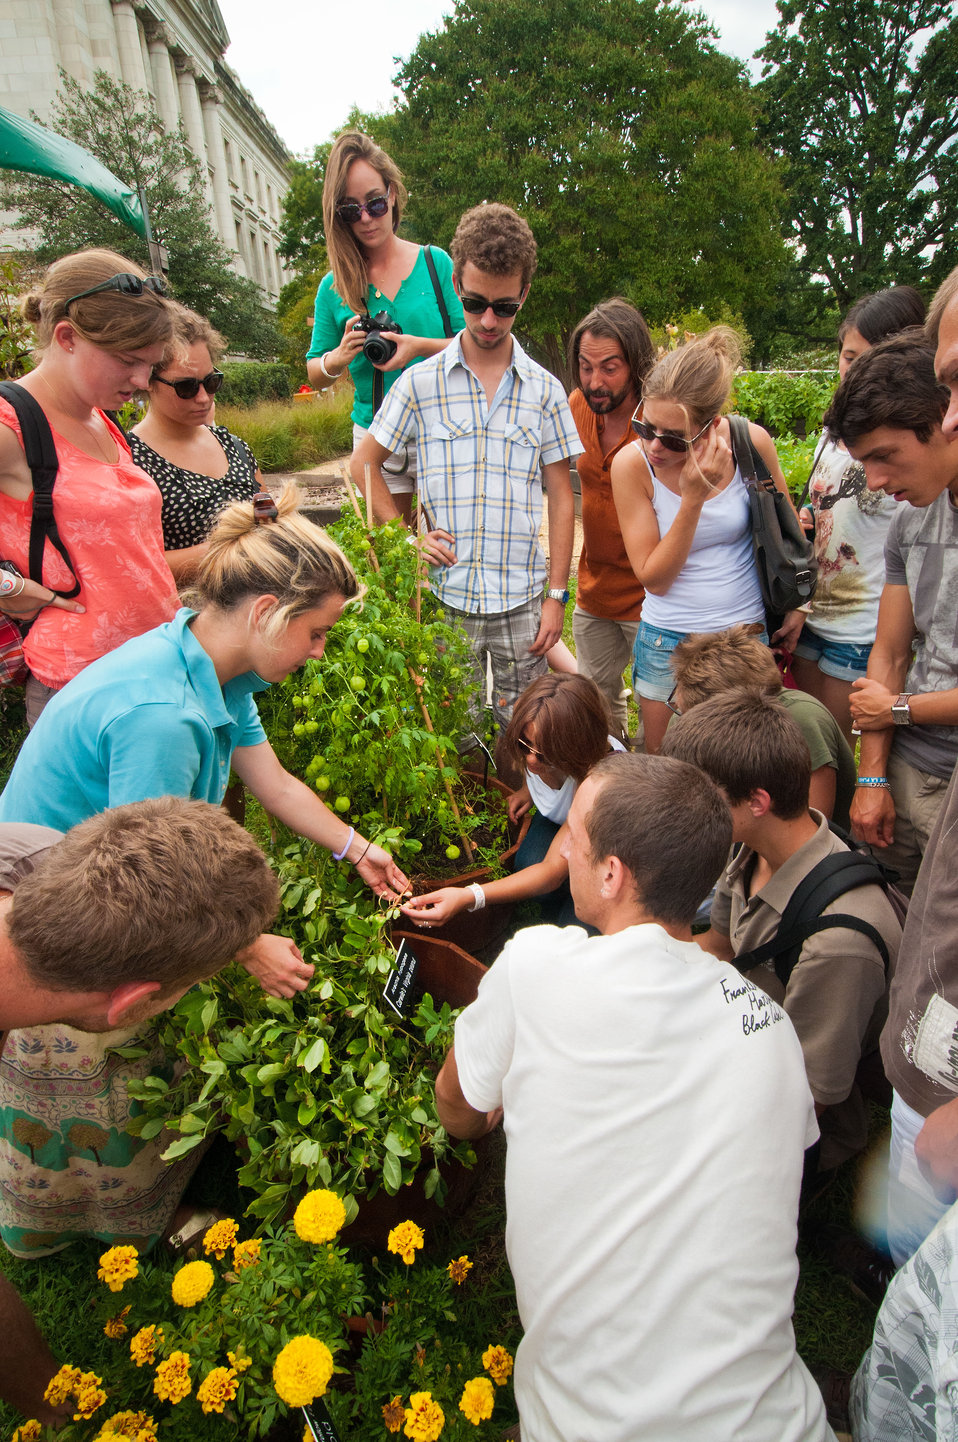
USDA People’s Garden, Outreach and Education Coordinator Annie Ceccarini (blue shirt), shows how peanuts grow to French students from Ecole Du Breuil, School of Horticulture and Landscaping Techniques, Paris, France. The students visited the United States Department of Agriculture People’s Garden in Washington, D.C., on Tuesday, September 4, 2012. The class was lead by Professor Hervé Dardillat, Landscape Architect. The students are on a two-week U.S. tour, which includes a visit to the White House Kitchen garden, as well as gardens and parks in Washington, D.C. The students will also visit Temple University in Philadelphia, PA., in addition to parks and gardens in New York City where they will also stay with host families and work on community gardens.